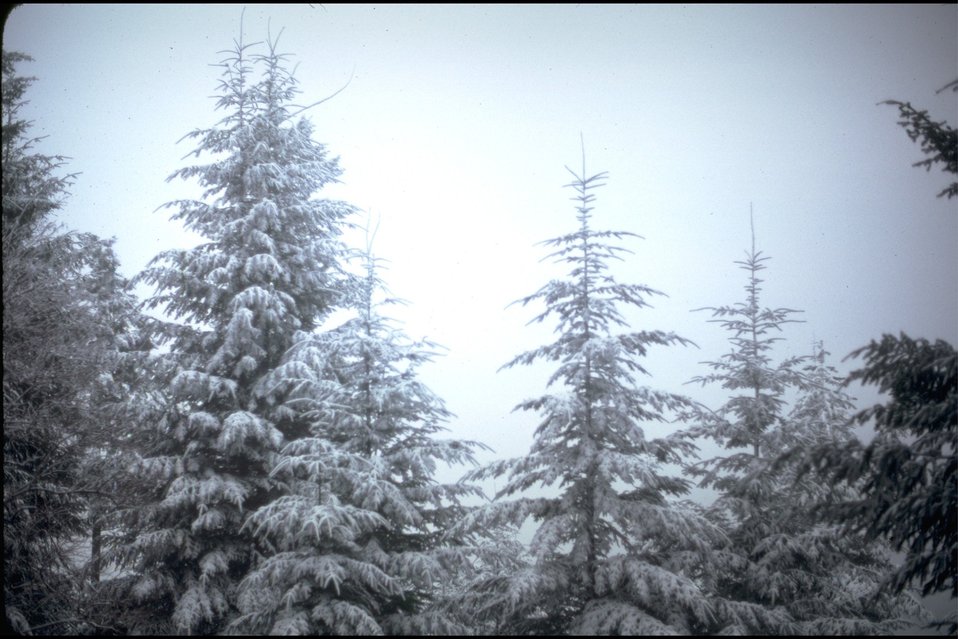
Wild Rogue River Shuttle Route, Snow on Bald Ridge.